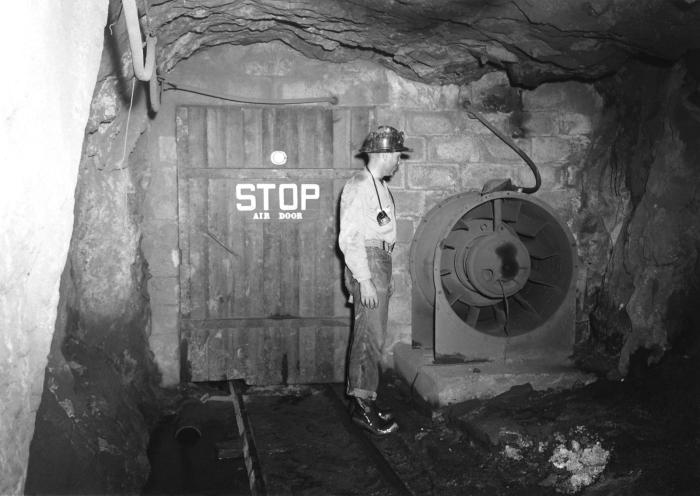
This historical photograph, provided by the Center for Disease Control's (CDC), National Institute for Occupational Safety and Health (NIOSH), depicted the inside of the 'U.S. Smelting, Refining, & Mining Co.' mine shaft in Utah. This mine shaft was at the 3200 foot subterranean level, in the U.S. Section (Exhaust Side), where towards the right, a 30 HP Joy Axivane� exhaust fan was located. Note that the fan's rear mechnics were exposed, through which, exhaust fumes would have been expelled. This fan had a 14,000 cfm flow-through capacity. In the close confines of a subterranean mine such as this one, it's critically important that proper air quality be maintained. Note that the miner was wearing a protective hard hat, but no filtered breathing mask; however, the quality of this air cannot be determined from this image.